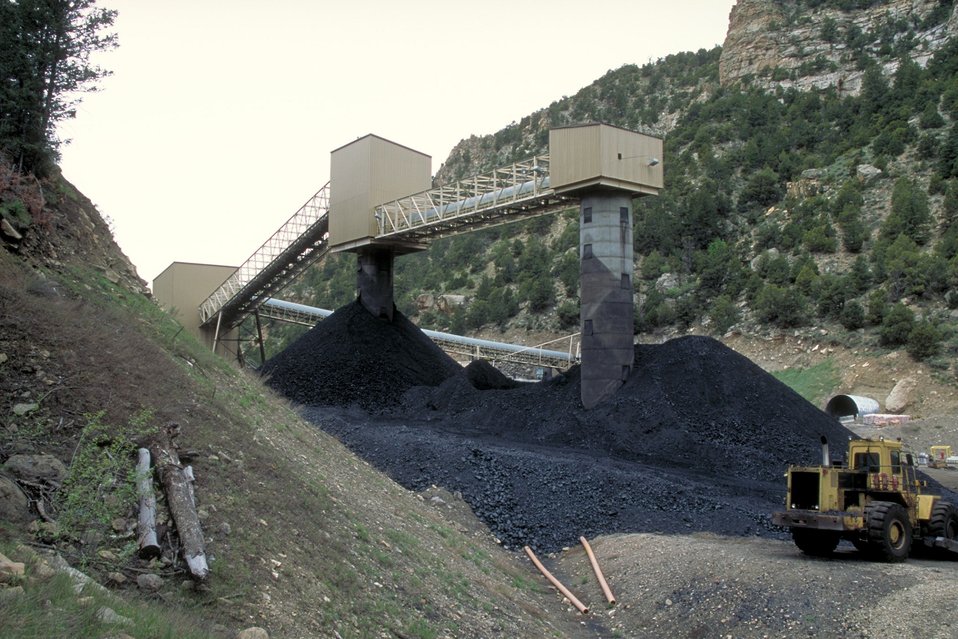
Coal production near Price, Utah.